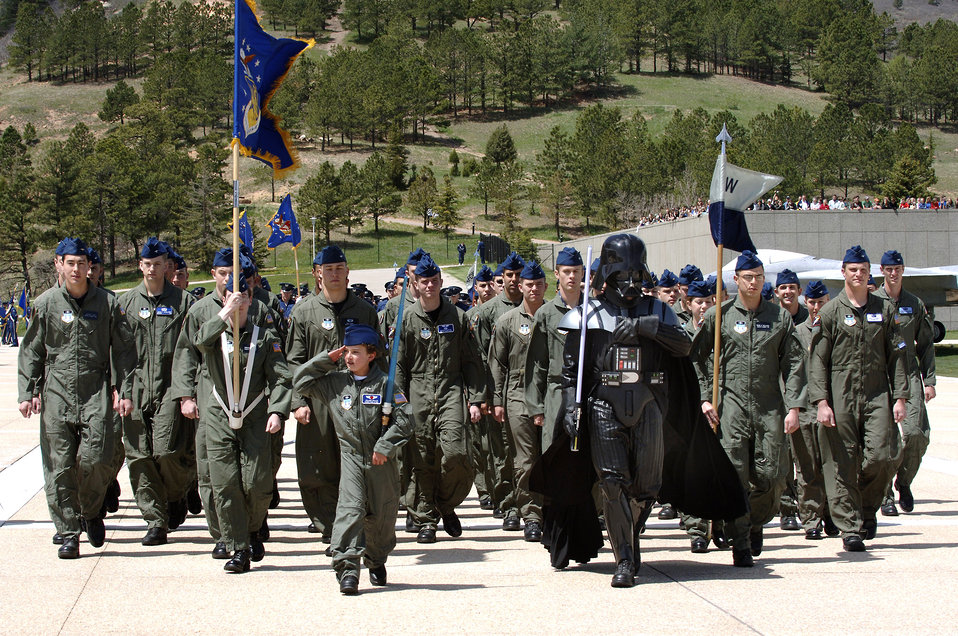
Academy honors 'Cadet for a Day' in Colorado

Ten-year-old Julian Willis leads cadet squadron 39 during the lunchtime formation at the U.S. Air Force Academy, Colo. The Make-a-Wish Foundation and the Air Force Academy made Julian a